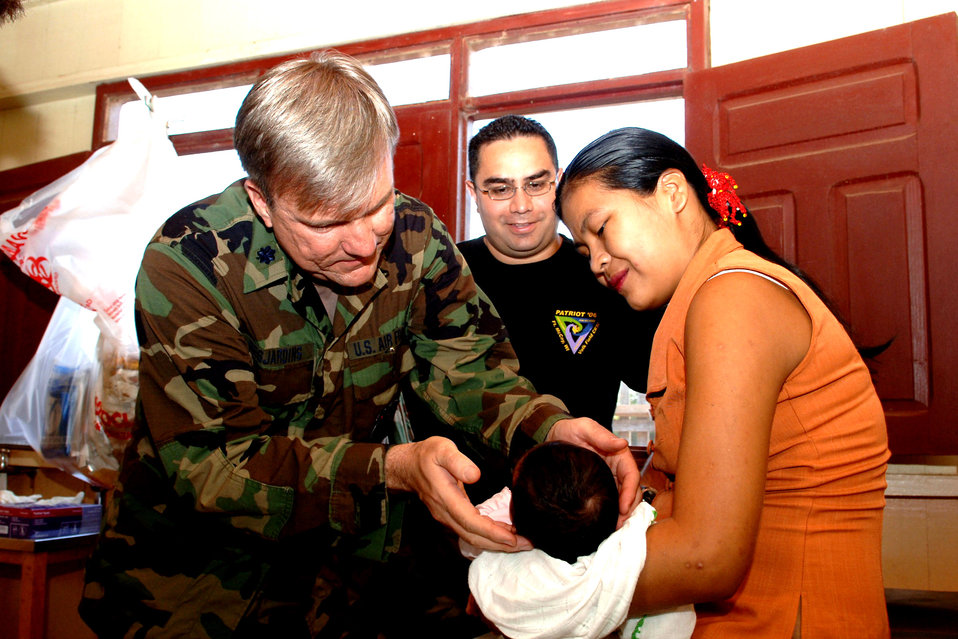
Air Force medics take medical mission to Bolivia

Lt. Col. Mark Desjardins treats a newborn Bolivian boy during a Medical Readiness Training Exercise in Cobija, Bolivia. A 30-member medical team was in Bolivia treating underserved populations in the country. Colonel Desjardins is assigned to the 143rd Medical Group in Quonset Point, R.I.